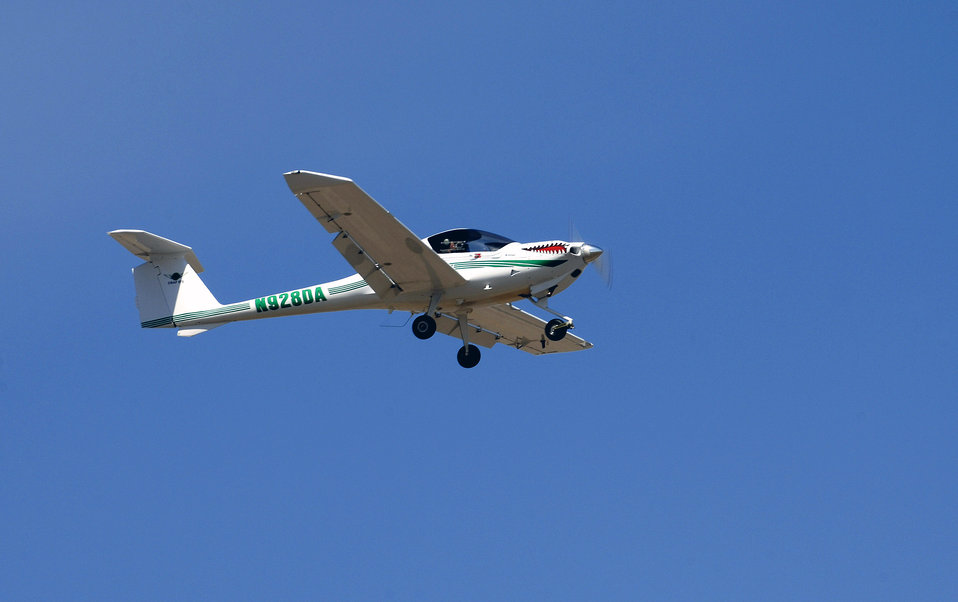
Making a pilot

A student pilot prepares to land a DA-20 aircraft on the Doss Aviation flightline during an Initial Flight Screening Course April 7 in Pueblo, Colo. The purpose of the course is to screen aviation candidates and prepare them for the more rigorous flight school programs that will place them behind the most powerful, technologically advanced airplanes in the world.